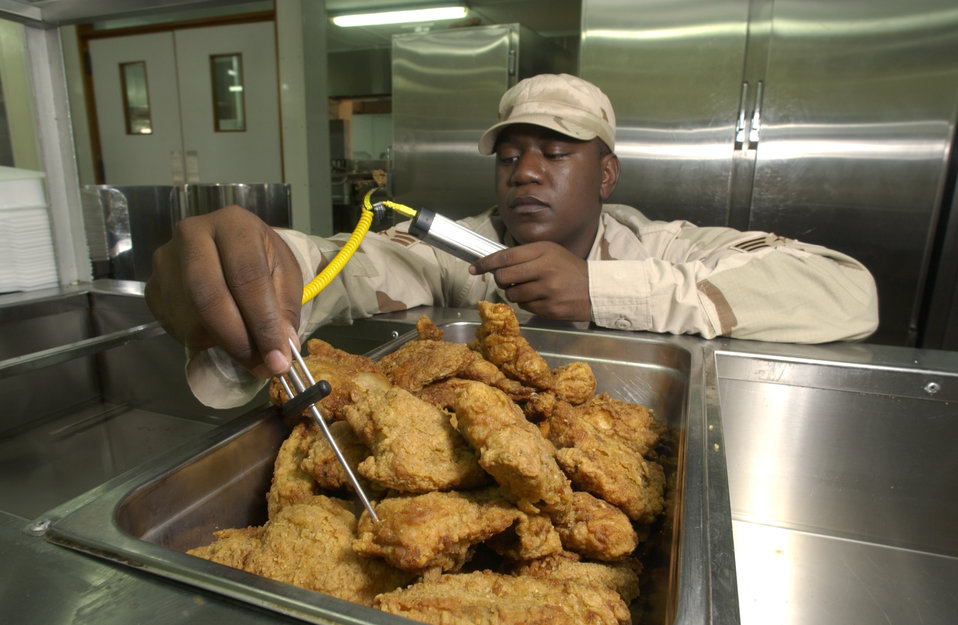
Get it while it's hot

AL UDEID AIR BASE, Qatar -- Senior Airman Raymond Sinclair-West inspects a dining facility here. He uses a digital thermometer to check chicken's temperature, which must be kept at more than 140 degrees Fahrenheit while in the serving line. Sinclair-West is deployed here from the 1st Aerospace Medical Squadron at Langley Air Force Base, Va.